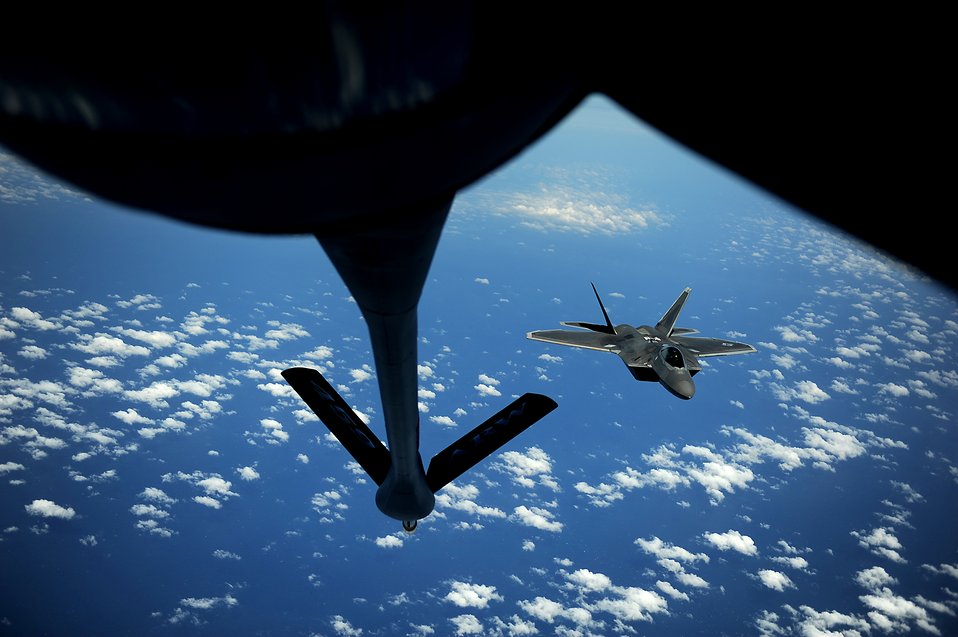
F-22 Raptor

A 1st Fighter Wing's F-22 Raptor from Joint Base Langley-Eustis, Va. pulls into position to accept fuel from a KC-135 Stratotanker with the 756th Air Refueling Squadron, Joint Base Andrews Naval Air Facility, Md. off the east coast on May 10, 2012. The first Raptor assigned to the Wing arrived Jan. 7, 2005. This aircraft was allocated as a trainer, and was docked in a hanger for maintenance personnel to familiarize themselves with its complex systems. The second Raptor, designated for flying operations, arrived Jan. 18, 2005. On Dec. 15, 2005, Air Combat Command commander, along with the 1 FW commander, announced the 27th Fighter Squadron as fully operational capable to fly, fight and win with the F-22. (U.S. Air Force Photo by: Master Sgt. Jeremy Lock)